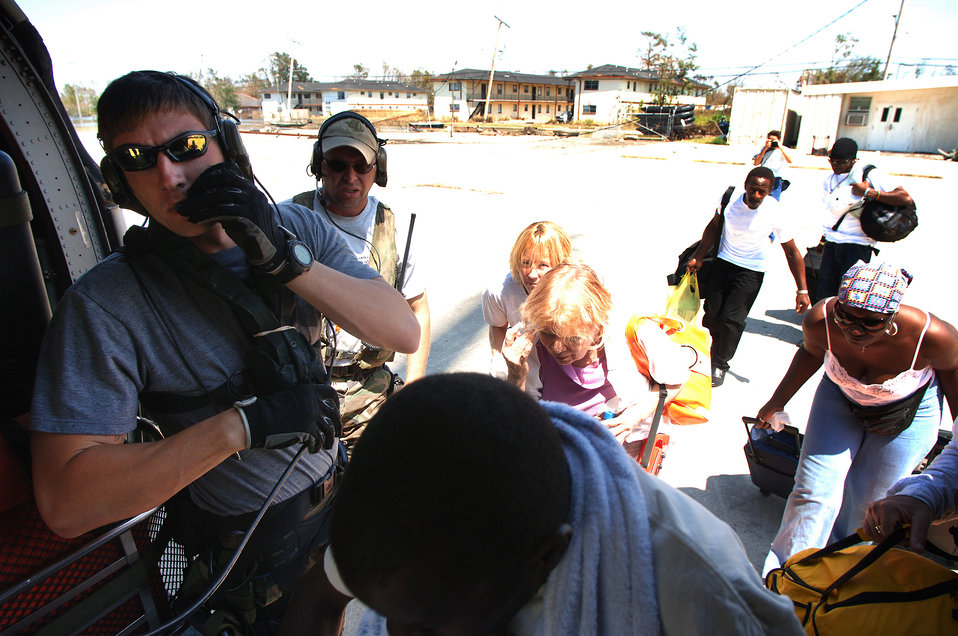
Some rescue teams leave, but Jackson mission continues

NEW ORLEANS -- A U.S. pararescueman from the 38th Rescue Squadron at Moody Air Force Base, Ga., helps load evacuees aboard an HH-60G Pave Hawk helicopter. Once rescued, all the evacuees are flown to the rescue operations main collection center located at the New Orleans airport.